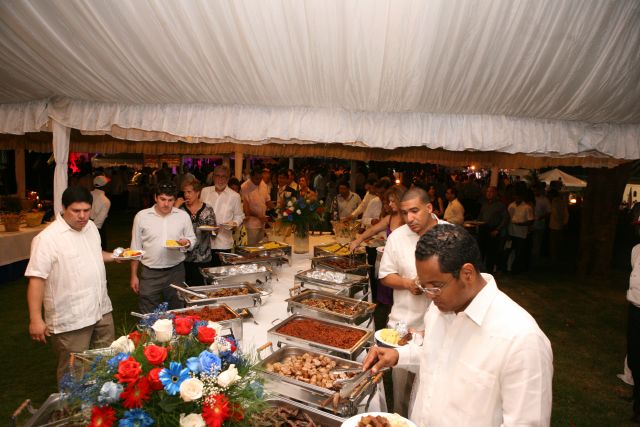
July 4th Celebration at U.S. Embassy in the Dominican Republic

Guests gather around the buffet at the U.S. Independence Day celebration at the U.S. Embassy Santa Domingo in Dominican Republic at the Chief of Mission's Residence on July 2, 2010.